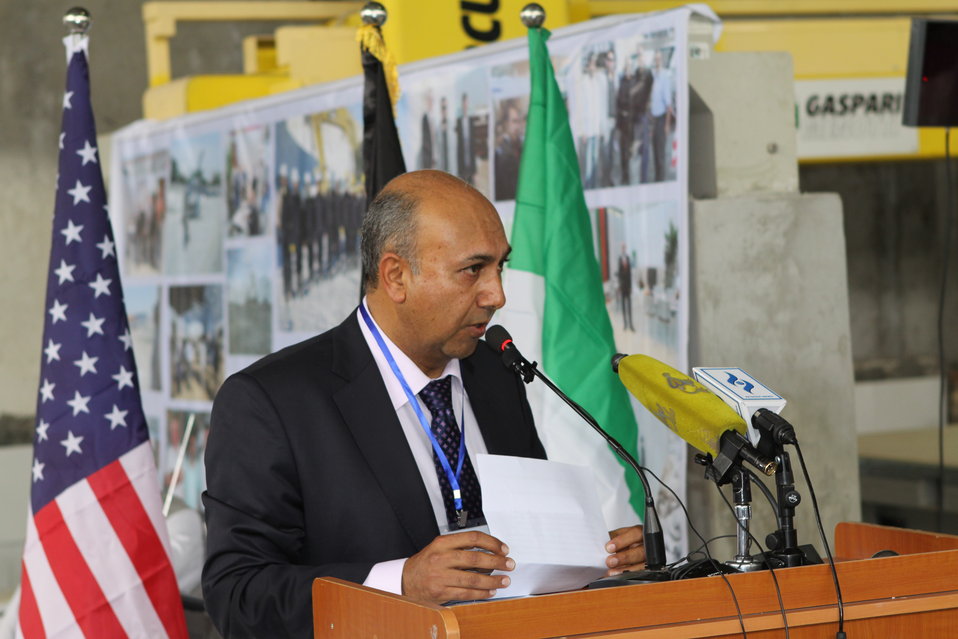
100525 Hirat Marble Conference 144